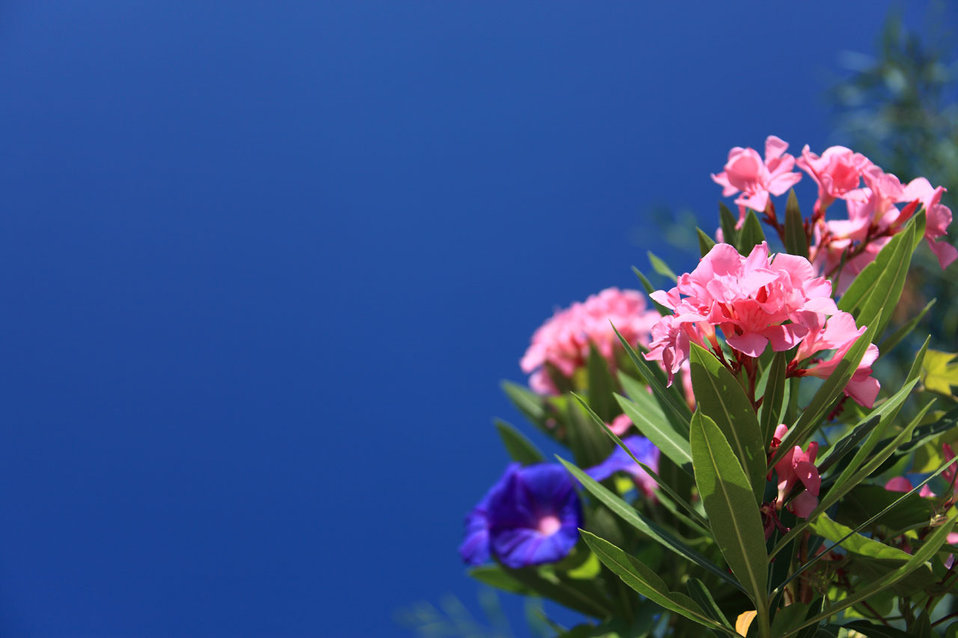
Colorful flower background image with some copyspace.